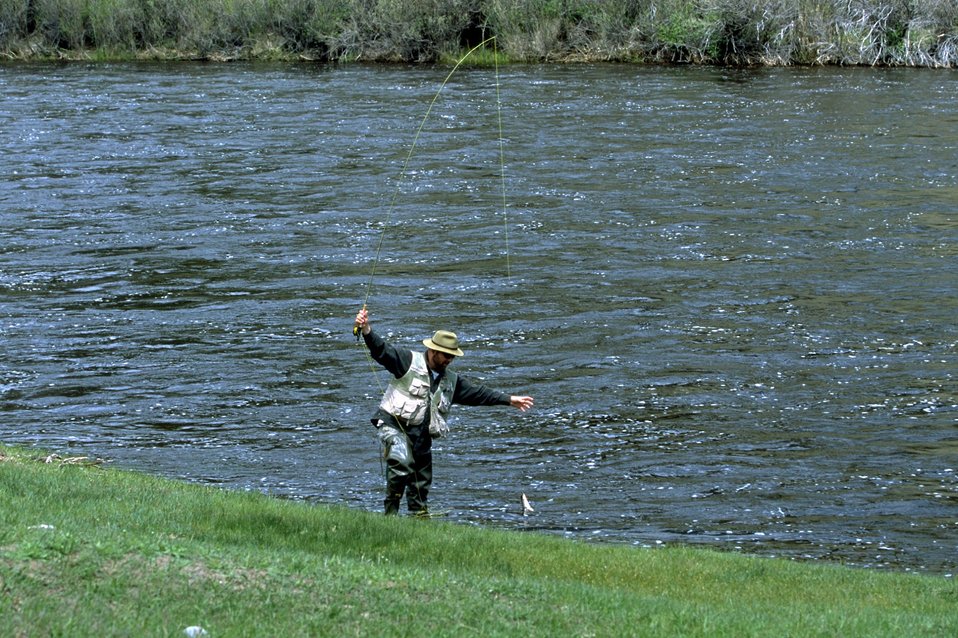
A successful catch on the Big Hole River